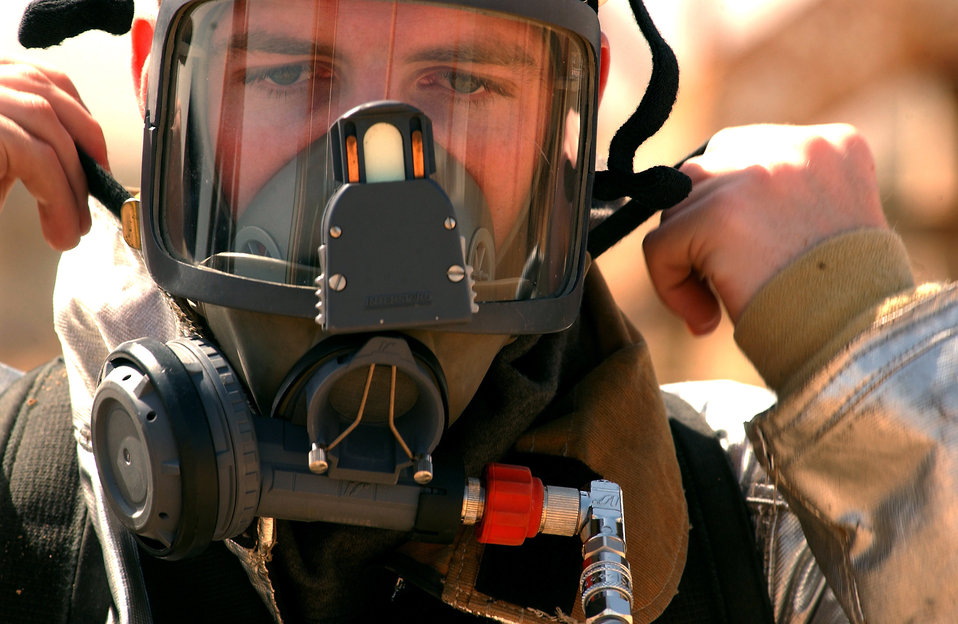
Masked man

OPERATION ENDURING FREEDOM -- Senior Airman Michael Campbell checks for a seal on his oxygen mask during a joint fire rescue exercise at an Enduring Freedom forward deployed locaiton. Campbell is a firefighter with the 320th Expeditionairy Civil Engineering Squadron.